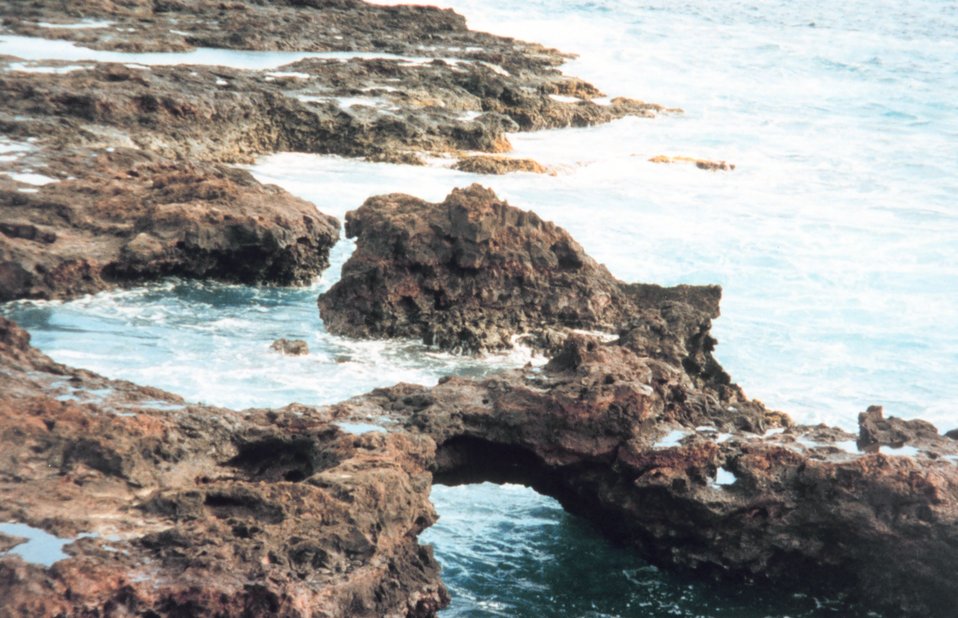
Sharp hard rocky shoreline